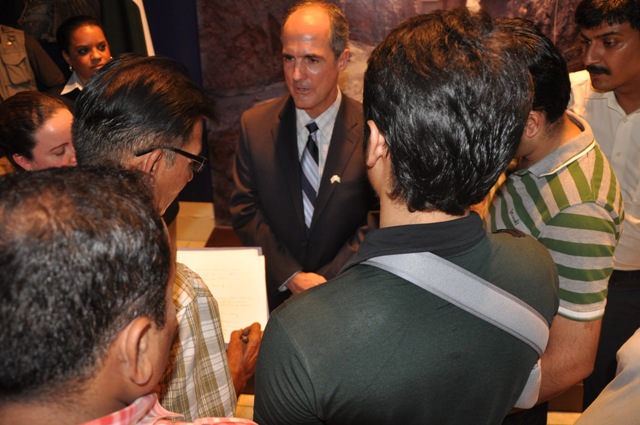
Provinicial Mission Director Punjab Ted Gehr answering questions from the media